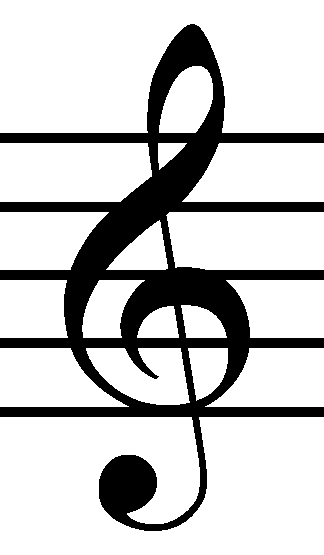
Deutsch: Violinschlüssel G Clef Italiano: Chiave di Sol o di Violino